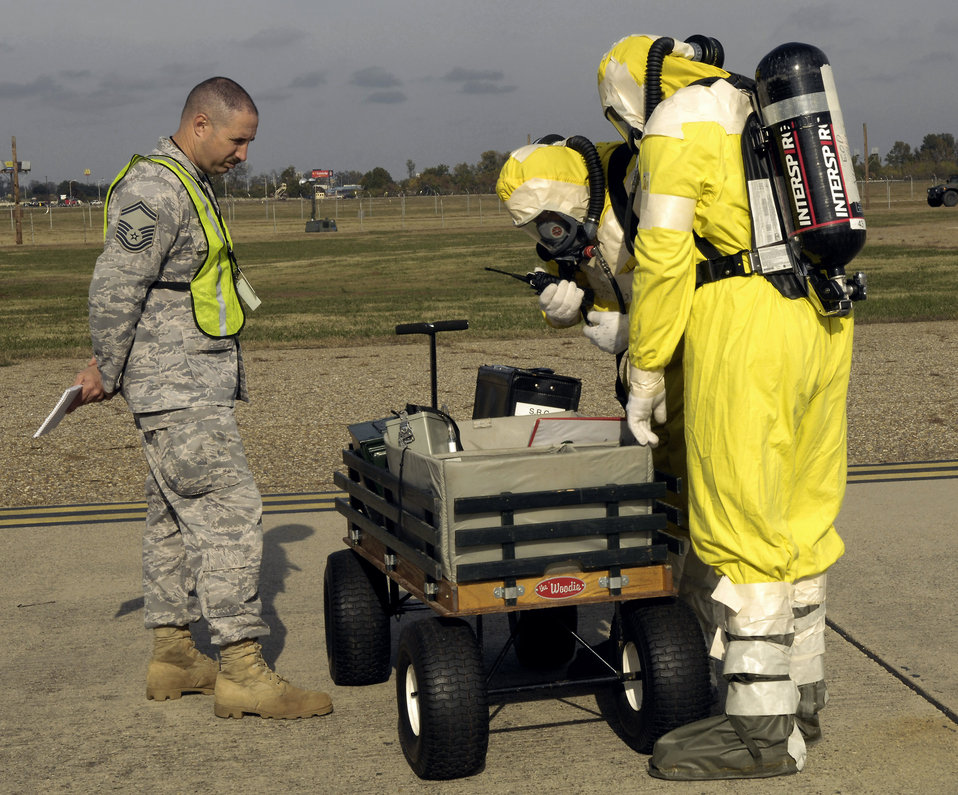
Barksdale officials complete Nuclear Surety Inspection

Members of the explosive ordnance disposal team are evaluated during a portion of the Air Combat Command Nuclear Surety Inspection Nov. 12 at Barksdale Air Force Base, La. ACC Inspector General officials graded the base's nuclear surety program management and administration, the personnel reliability program and logistics movement.